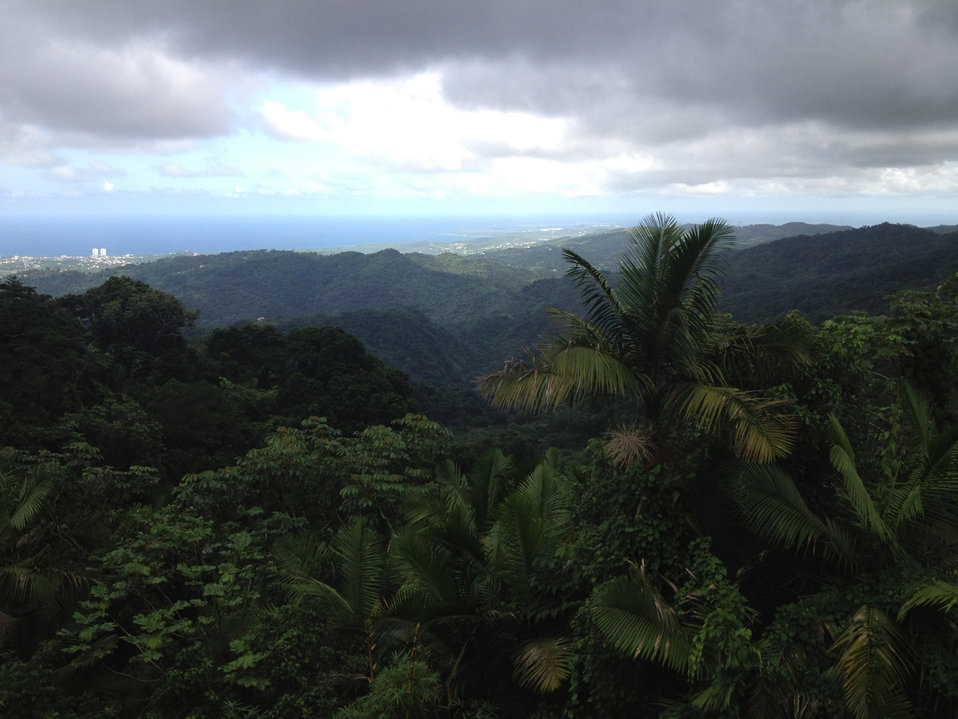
Rainforest view

Tropical rainforest overlooking ocean, el yunque, puerto rico.